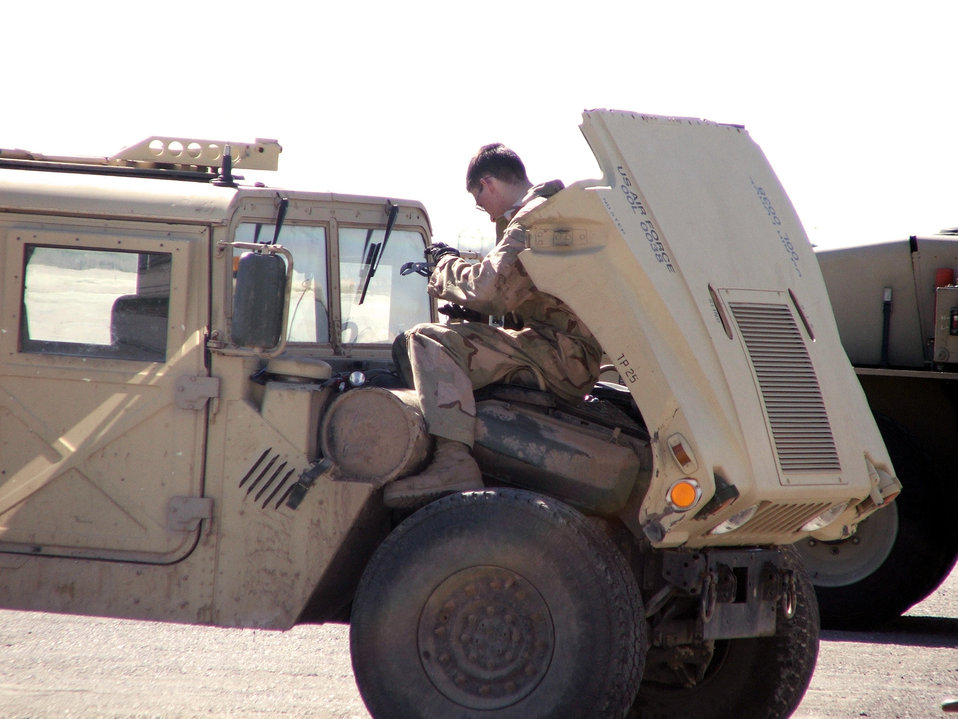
Check under the hood

Airman 1st Class William Lawson, does some